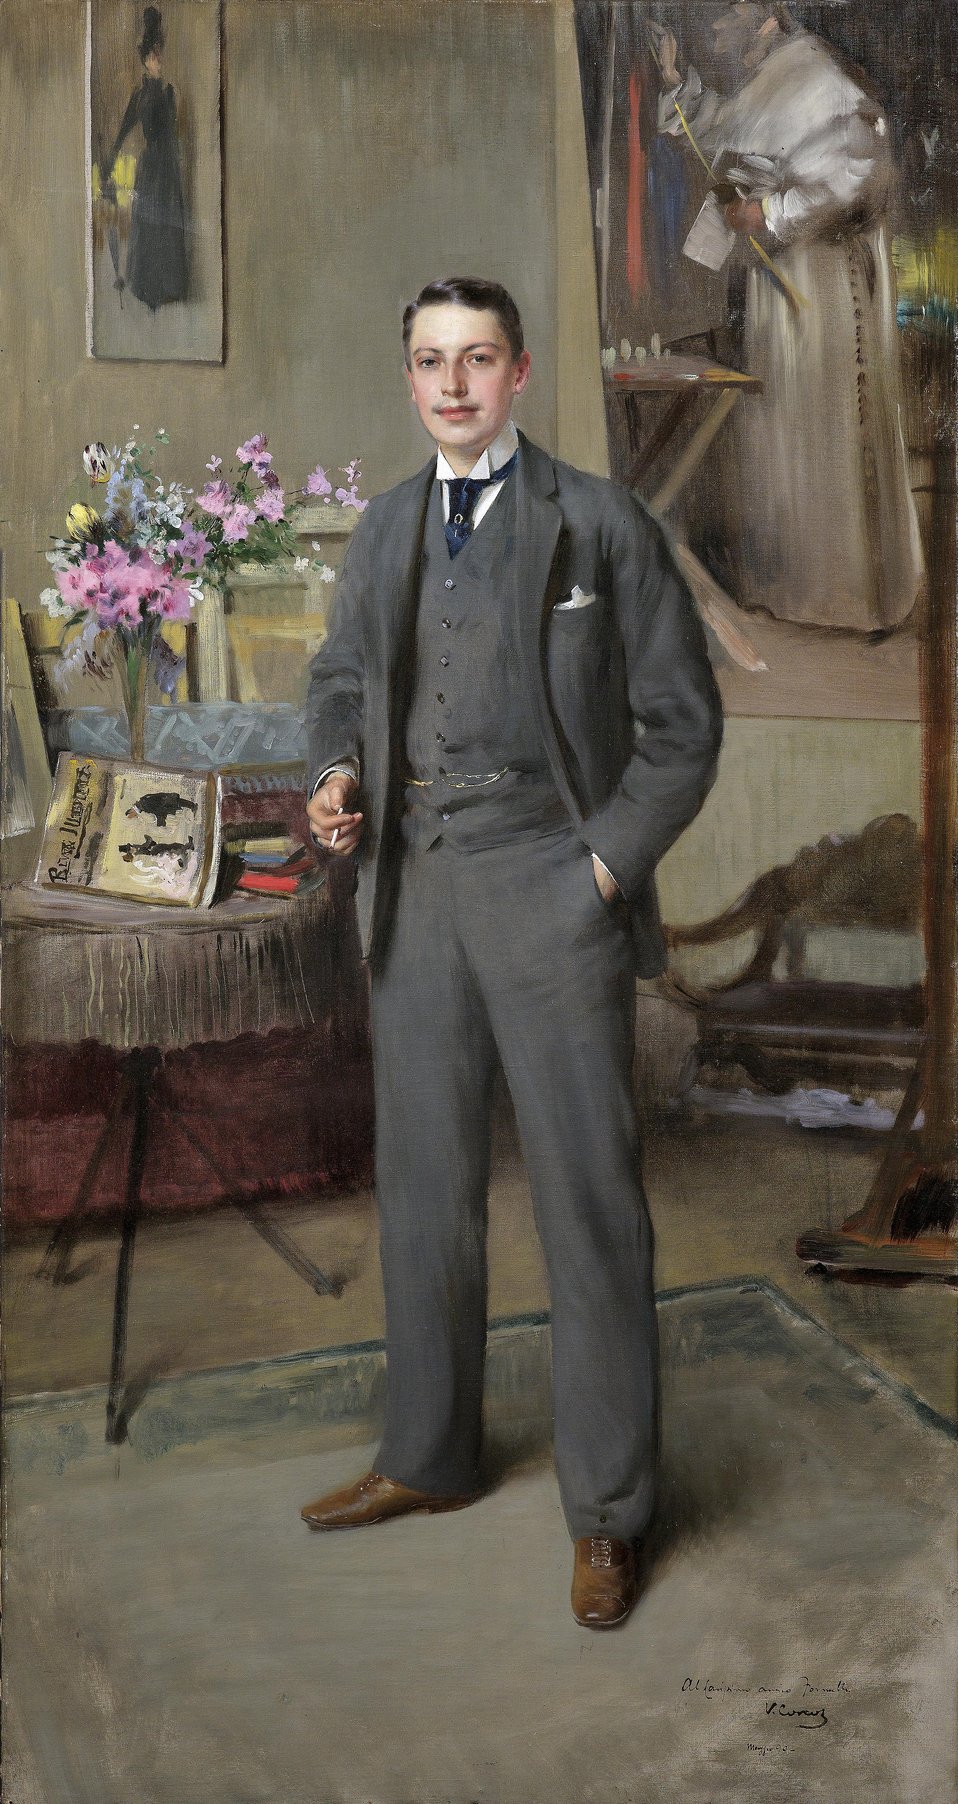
Vittorio Matteo Corcos Herrenportrait 1890